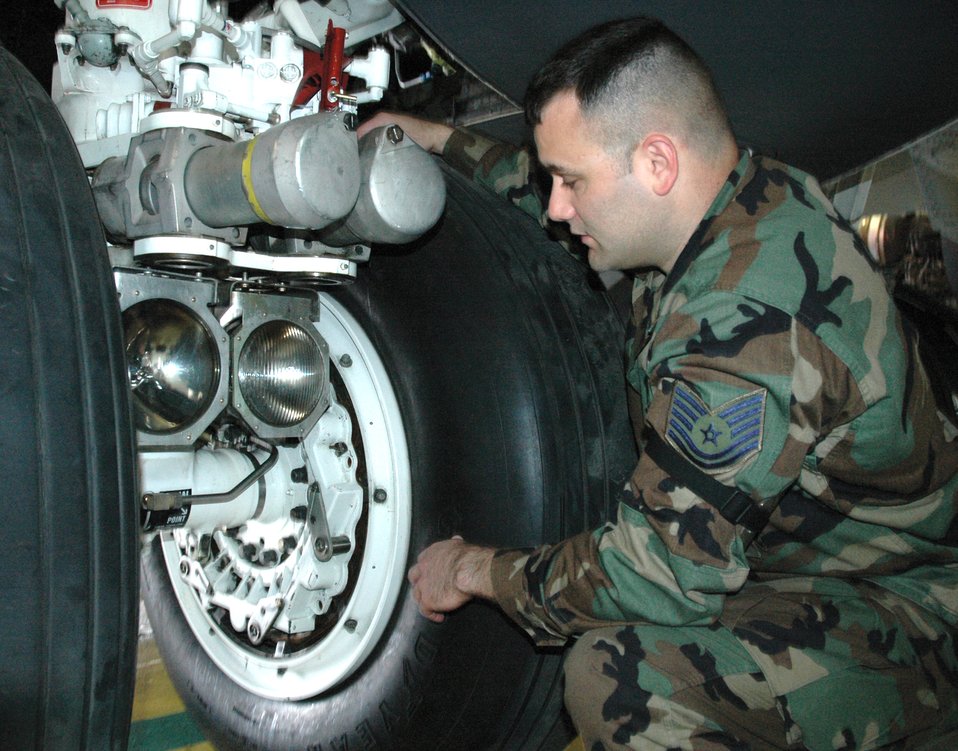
NCO awarded $10,000 for IDEA

Tech. Sgt. James Mazurek inspects the main landing gear of a B-52H Stratofortress. Sergeant Mazurek received $10,000 from the Air Force Innovative Development through Employee Awareness program for his idea to insert a warning paragraph to the technical orders for properly hooking up a tow bar to prevent damage to the wheel's brake assembly. He is assigned to the 5th Maintenance Squadron at Minot Air Force Base, N.D.